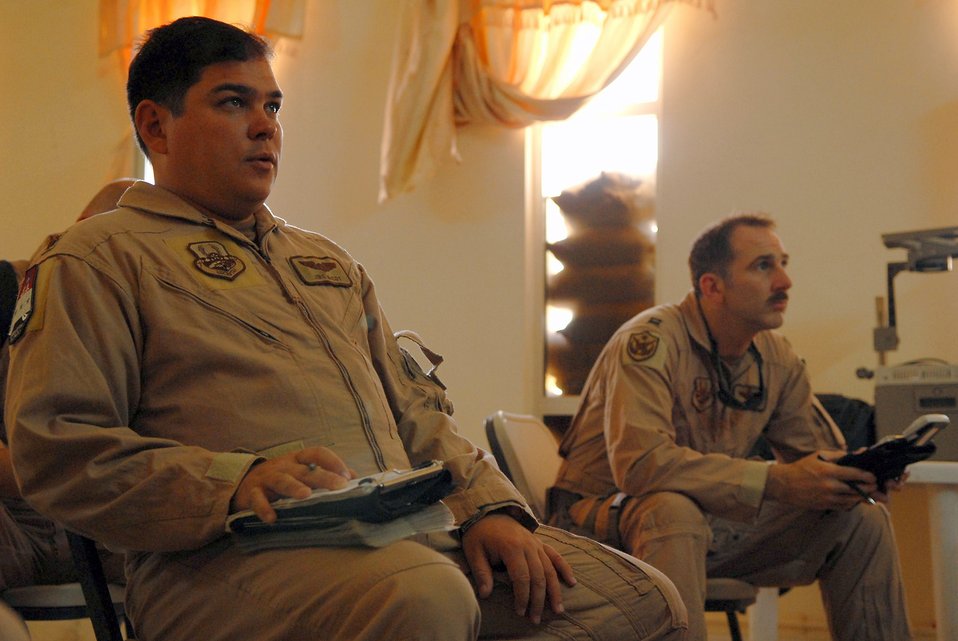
Airman volunteers for 18-month deployment to help Iraq

Maj. Jiro McCoy listens to a mission brief May 29 prior to a training flight over Camp Taji, Iraq. The missions enable U.S. Air Force pilots to train Iraqi air force pilots on the practical applications of lessons learned in a classroom setting. Major McCoy is the 770th Air Expeditionary Advisory Squadron Mi-17 (multi-role helicopter) commander of advisers. The major, who is deployed from Fort Rucker, Ala., extended twice during his deployment, spending 18 months in Iraq.